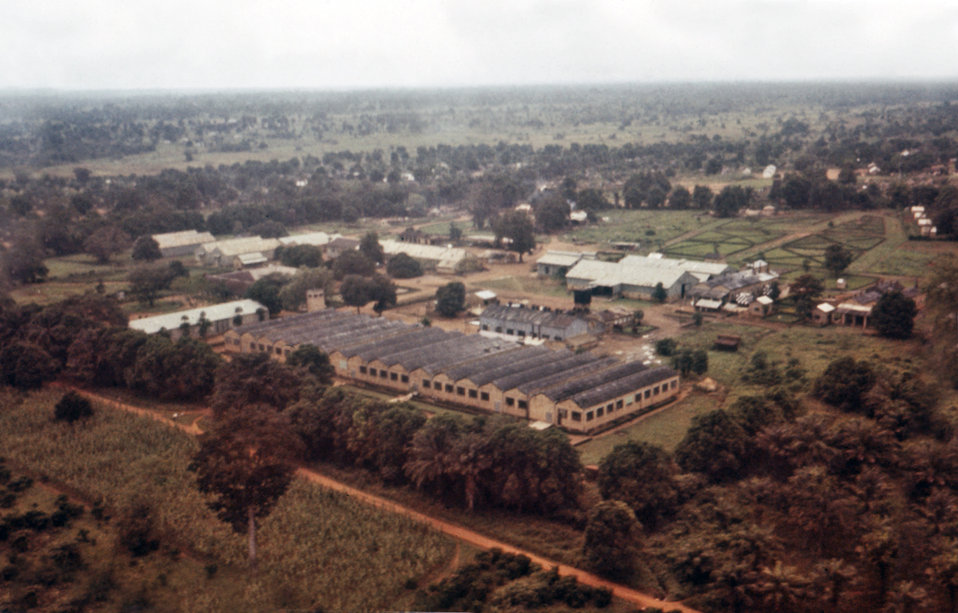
This photograph showed an aerial view of a cotton factory located in Nzara, Sudan where the earliest cases in the 1976 Sudan Ebola outbreak had worked.